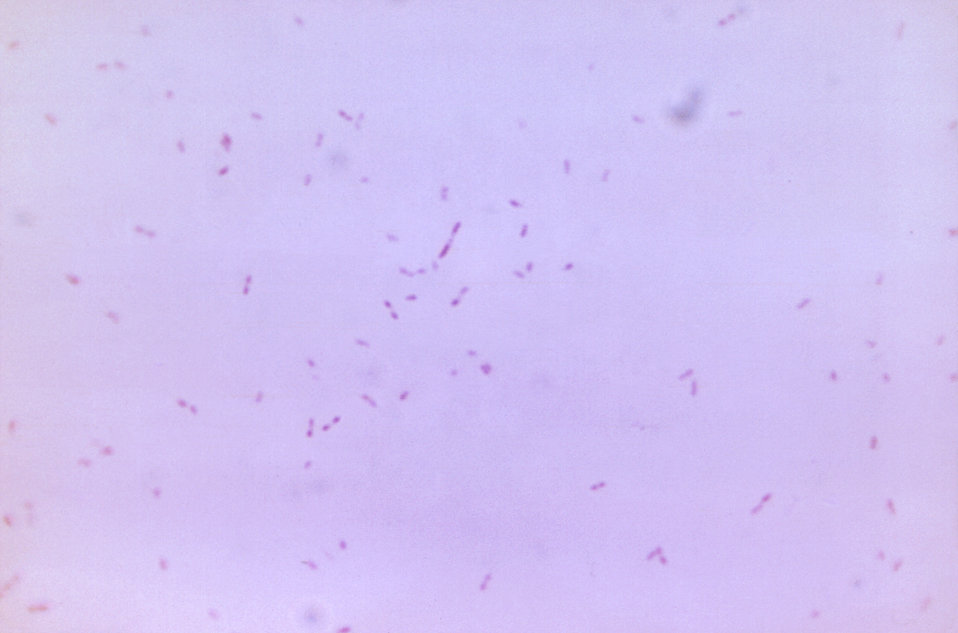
Magnified 956X, this Gram-stained photomicrograph depicted numerous Gram-negative Fusobacterium sp. bacteria, which had been cultured for a 48 hour time period on a blood agar plate (BAP).